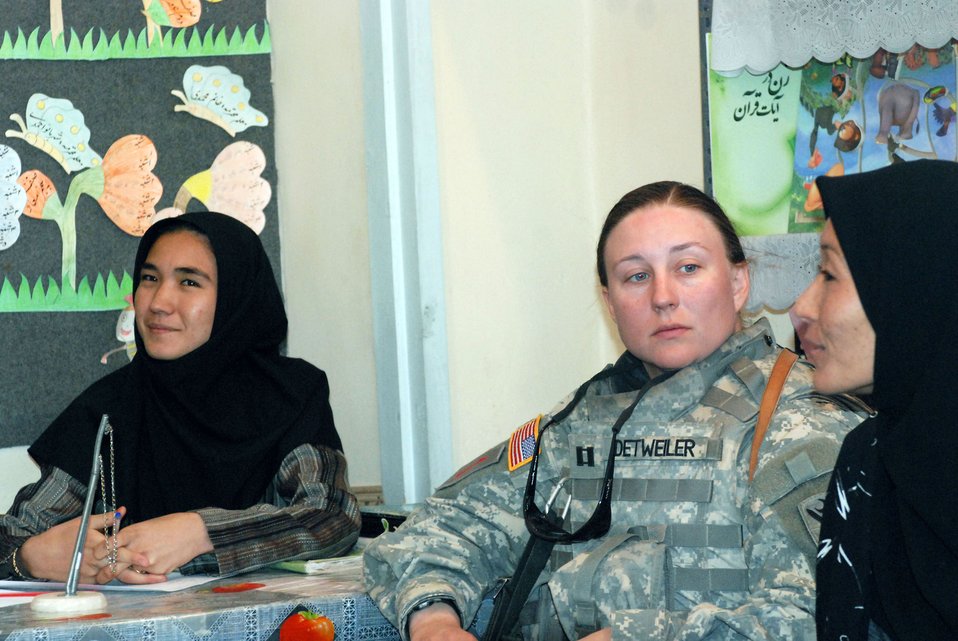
Servicemembers reach out to Afghanistan women

Army Capt. Megan S. Detweiler (center) listens as an Afghan teacher at an elementary school in Herat discusses issues of concern Afghan women are facing Sept. 29. Captain Detweiler, an information operations officer for Task Force Phoenix in Kabul, and nine other U.S. military women met with female teachers to drop off donated and requested supplies and to discuss ways coalition and the Afghan national security forces could be of assistance to the school and to Afghan women in general.